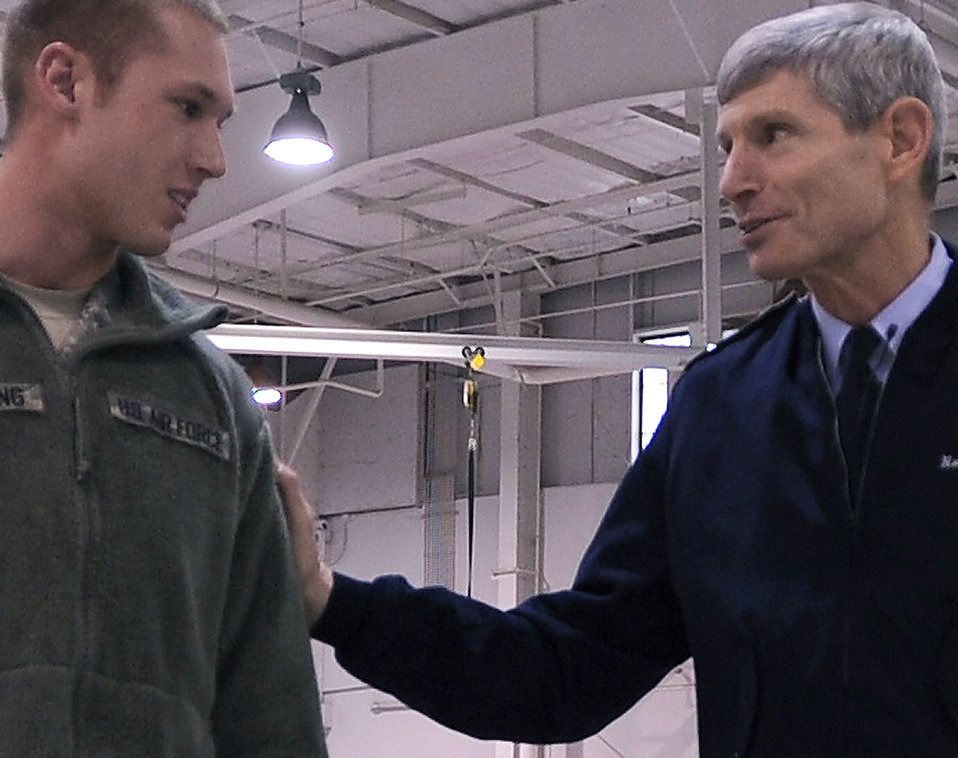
CSAF Norton Schwartz visits Whiteman AFB

Air Force Chief of Staff Gen. Norton Schwartz congratulates 2nd Lt. Eric Birdsong March 8, 2011, at Whiteman Air Force Base, Mo. Lieutenant Birdsong is the 509th Logistics Readiness Squadron officer in charge of maintenance support. He was called to the stage during an